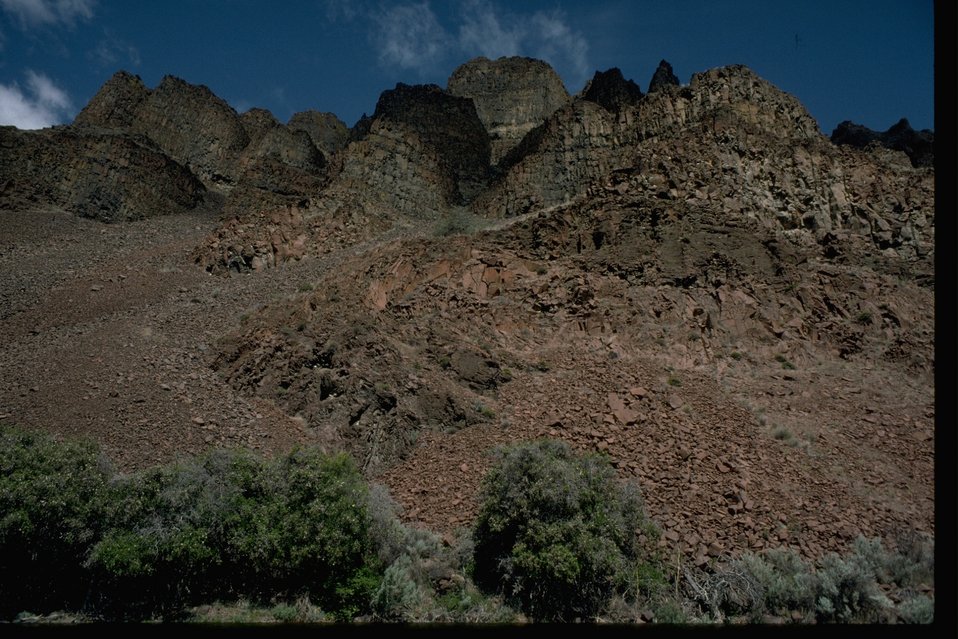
The rocky peaks of the Lower John Day Wilderness Study Area. WSA OR 5-6.